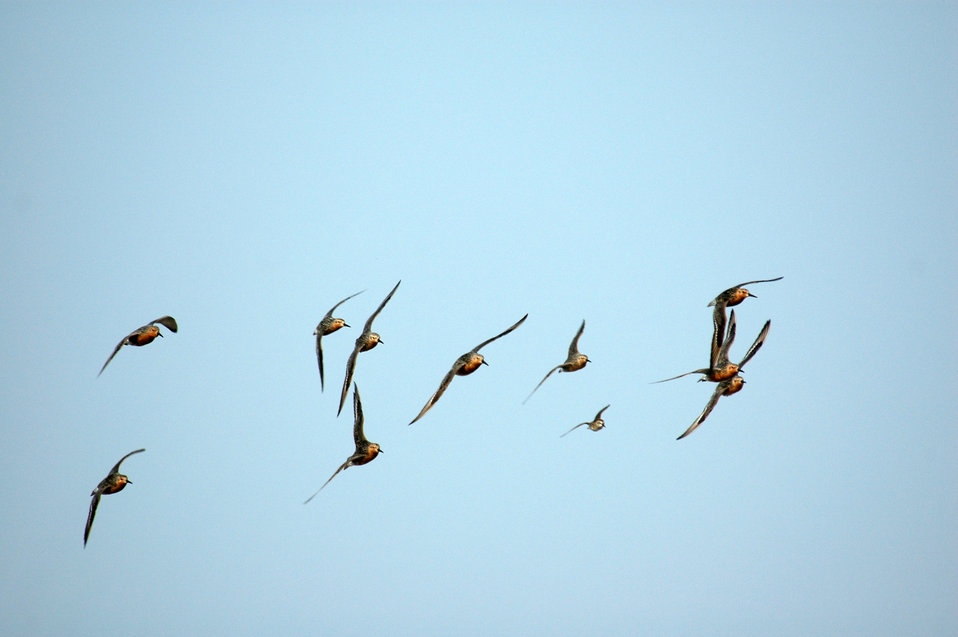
Red Knot in Flight

Mispillion Harbor, Delaware.